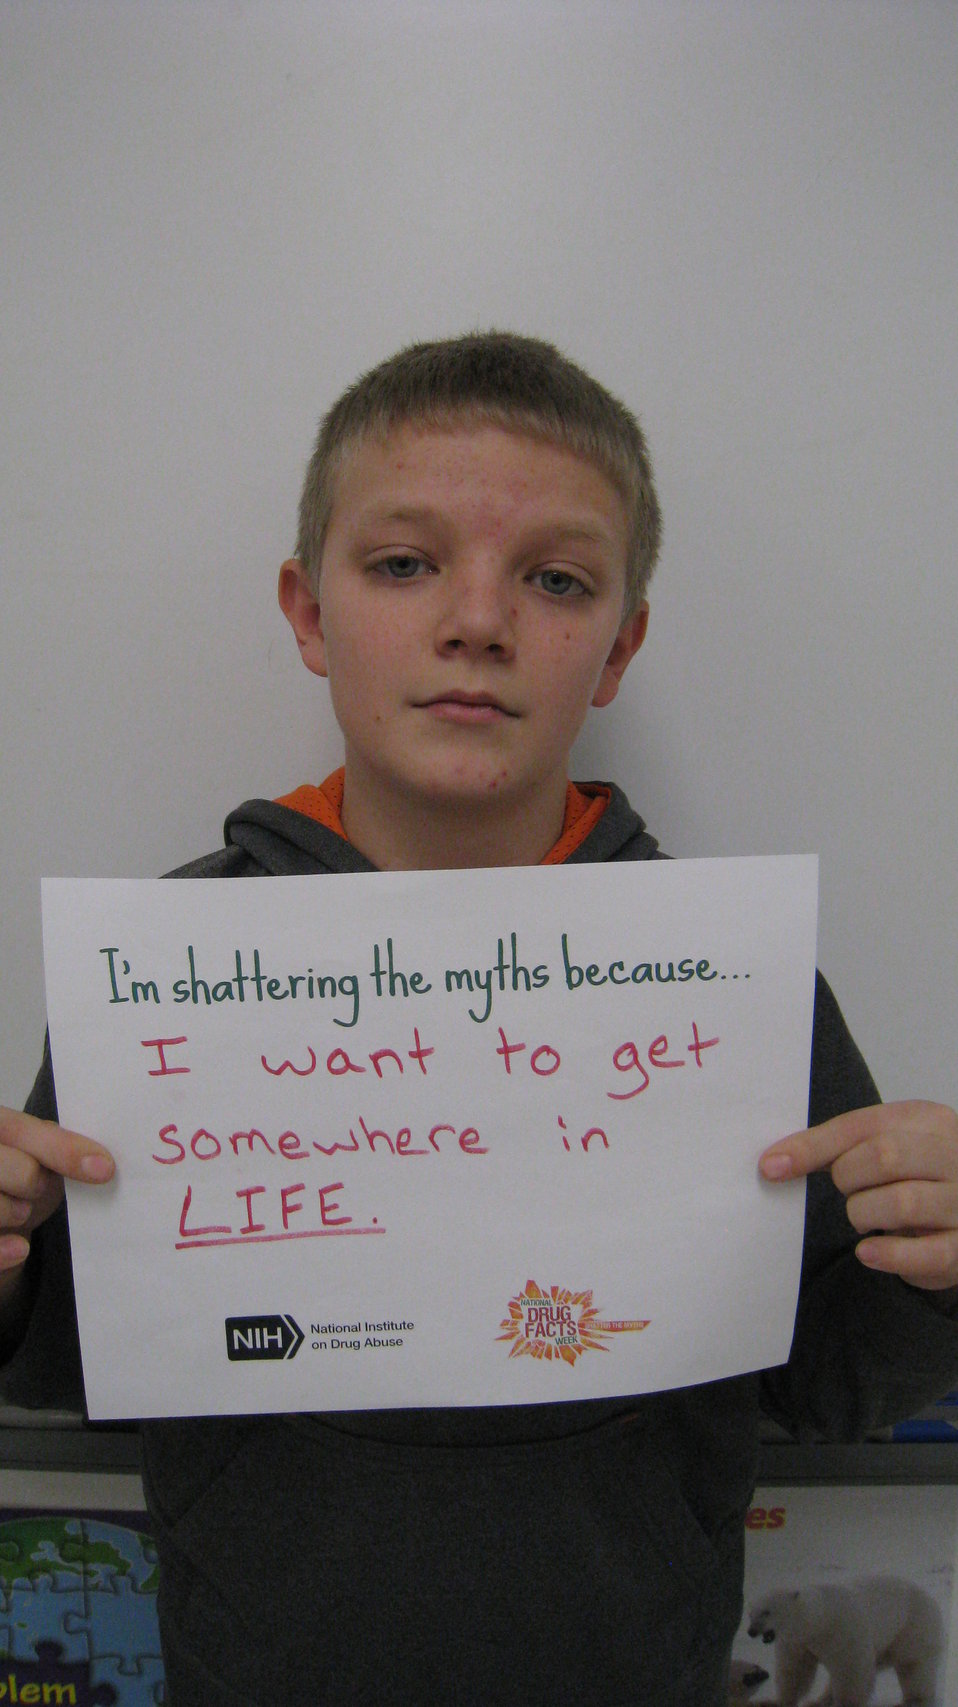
I'm Shattering the Myths Because...

Teenagers from the Van Buren County SAFE Coalition's, Youth Leadership Council (YLC) in Keosauqua, Iowa participate in various events during National Drug Facts Week, 2014.